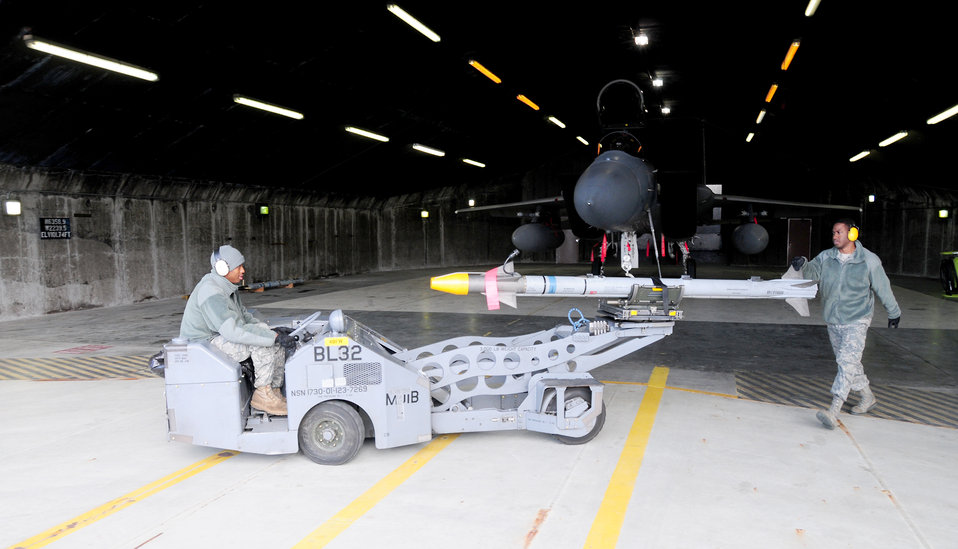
Icelandic Air Policing Mission

Senior Airman Marquell Stalling (left) drives an MJ-1, a vehicle specially made to load munitions, as Staff Sgt. Eric Venter guides an AIM-9X missile Sept. 23, 2010, at Keflavik, Iceland. Sergeant Venter and Airman Stallings are deployed from the 748th Aircraft Maintenance Squadron at Royal Air Force Lakenheath, England.